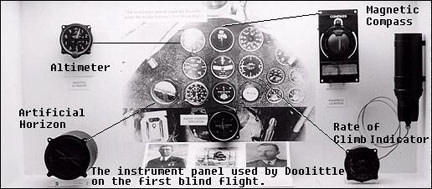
First Blind Flight

The instrument panel used by Lt. Jimmy Doolittle on the first blind flight.